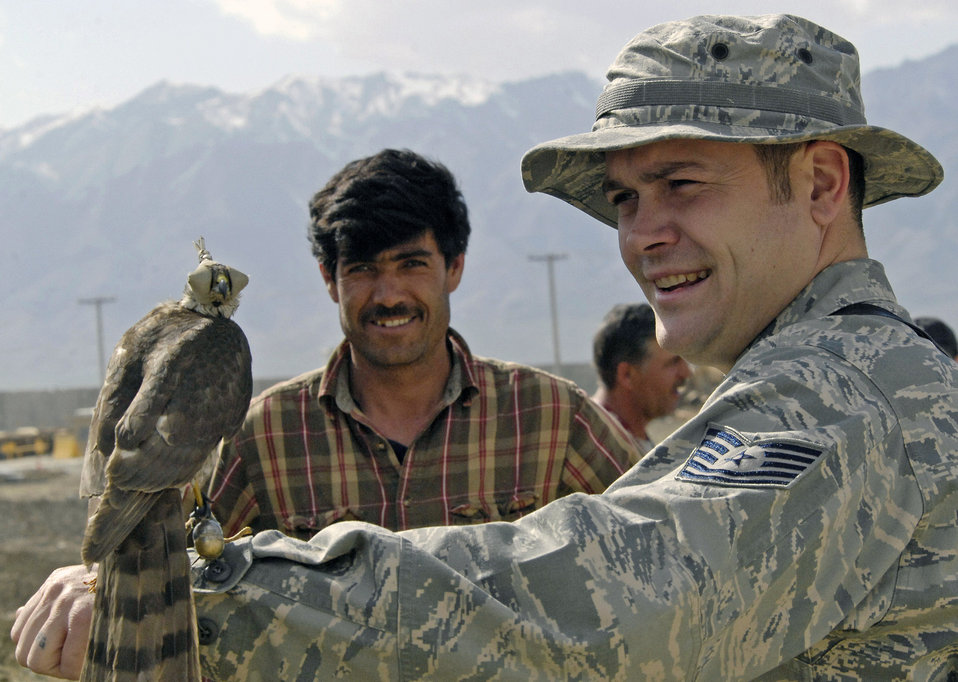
Safety experts spearhead efforts to minimize bird strikes

Tech. Sgt. Shane Sweeney holds out a falcon trained by a local Afghan falconer to catch much larger black kite birds that have infested areas near the flightline March 29 at Bagram Airfield, Afghanistan. The falcon's feet are rigged with snare traps so that when the larger kite bird attacks it gets tangled with the falcon and falls to the ground. Sergeant Sweeney is a 455th Air Expeditionary Wing weapons safety member.